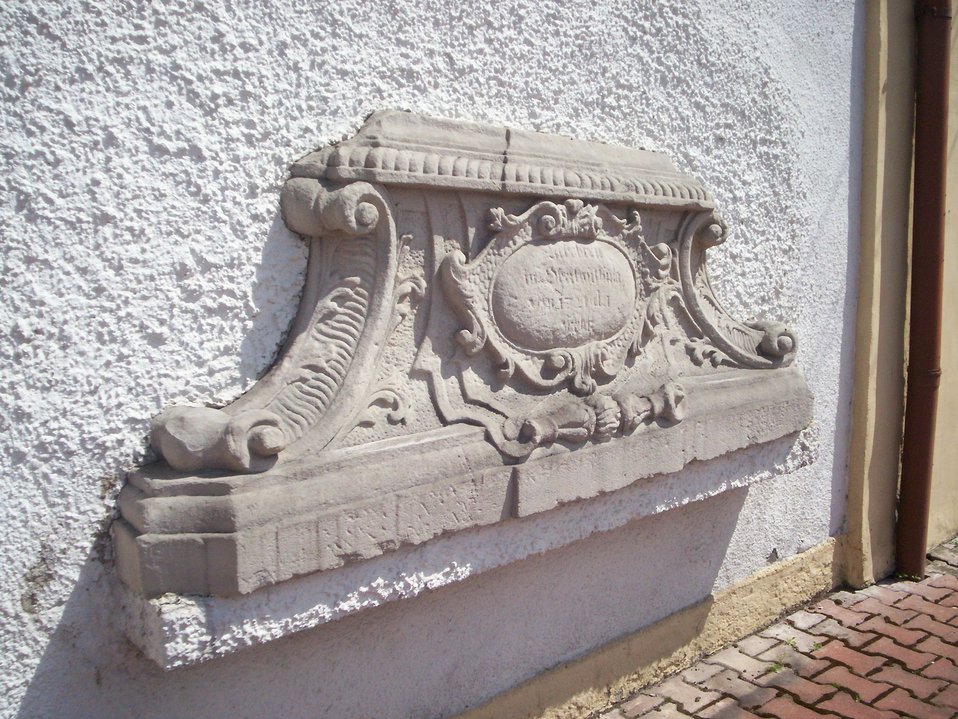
Polski: Kościół MB Różańcowej w Radomierzu. Epitafium. Esperanto: La preĝejo patronata de “Rozaria Dipatrino” en Radomierz. La epitafo.